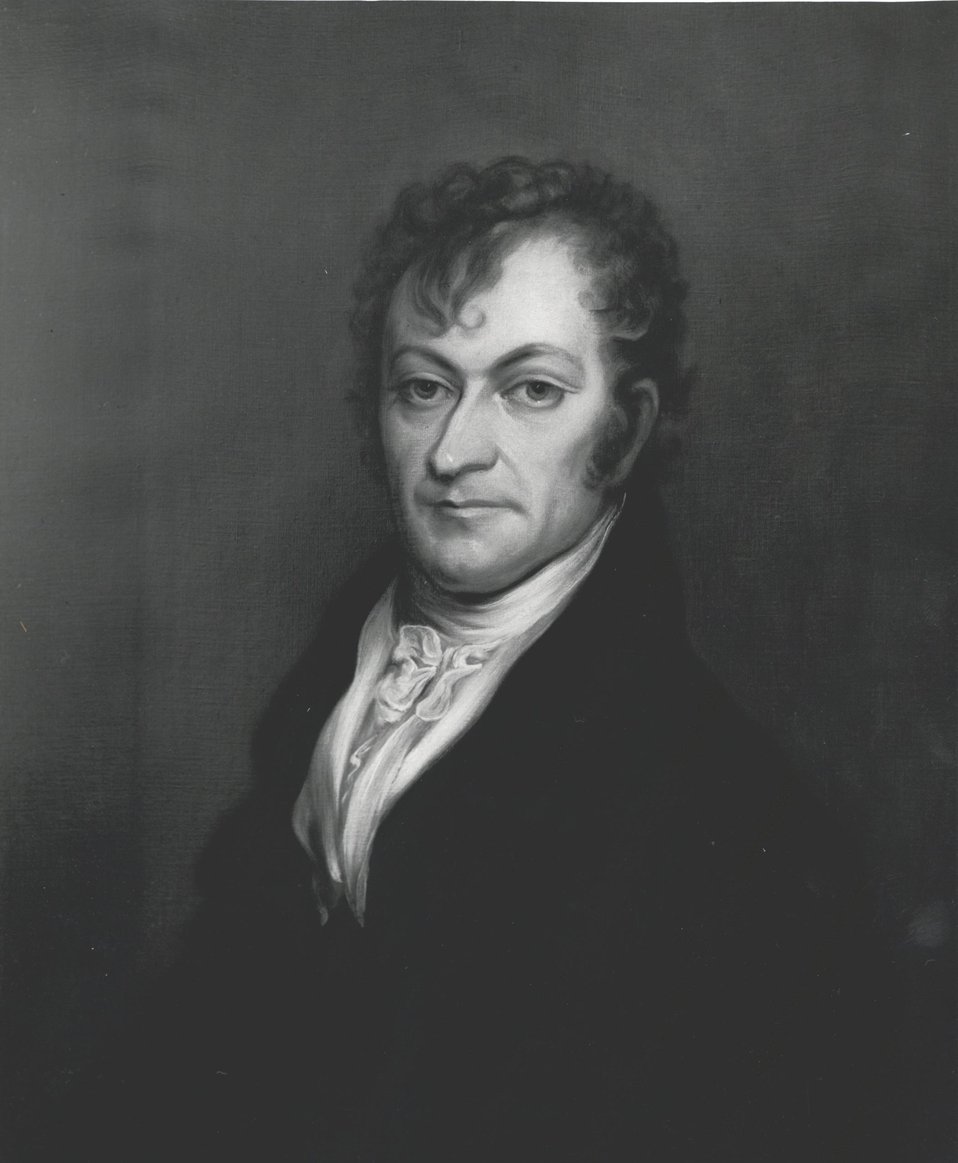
Edward Livingston, U.S. Secretary of State, May 24, 1831 to May 29, 1833